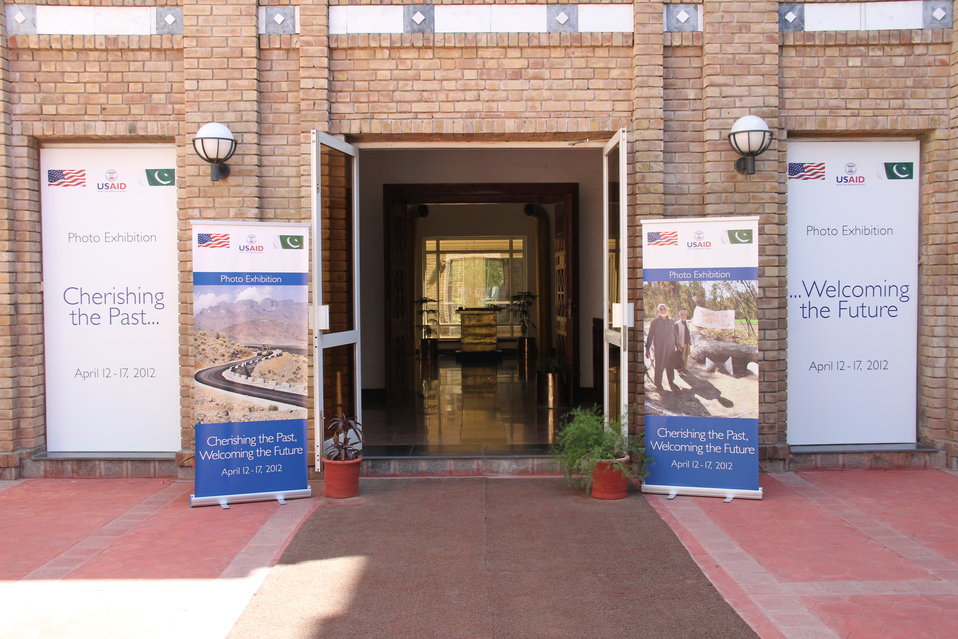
Photo Exhibition Celebrate US-PAK Cooperation at PNCA, Islamabad on April 13, 2012